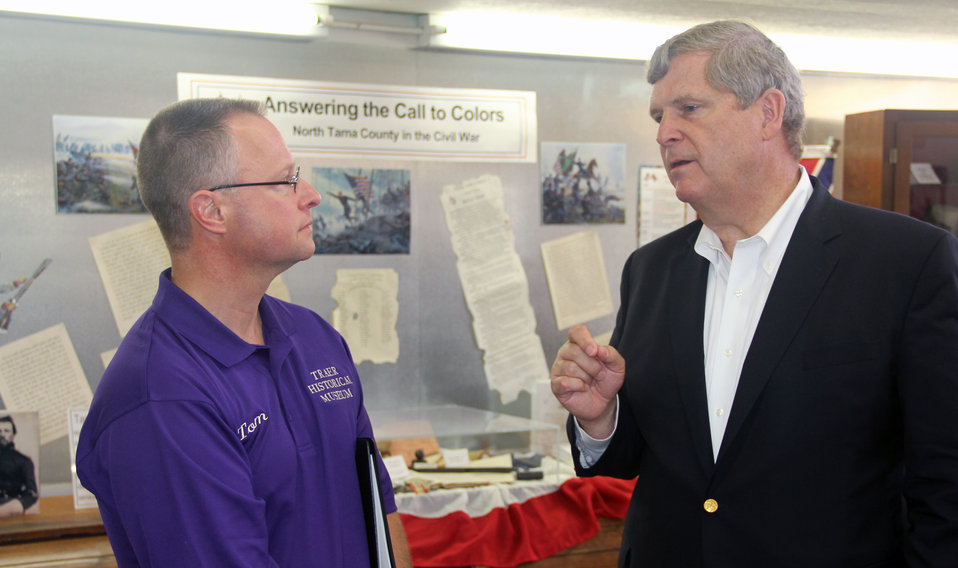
Agriculture Secretary Tom Vilsack speaks with board member Tom Wicks (l) after making remarks at the opening ceremony for the Traer Historical Museum exhibit honoring the longest serving cabinet member, former U.S. Agriculture Secretary James 'Tama Jim' Wilson. Wilson was Agriculture Secretary from 1897-1913 under Presidents McKinley, Roosevelt and Taft, at Traer Historical Museum, Traer, Iowa Traer, IA, on Saturday, Jul. 20, 2013.